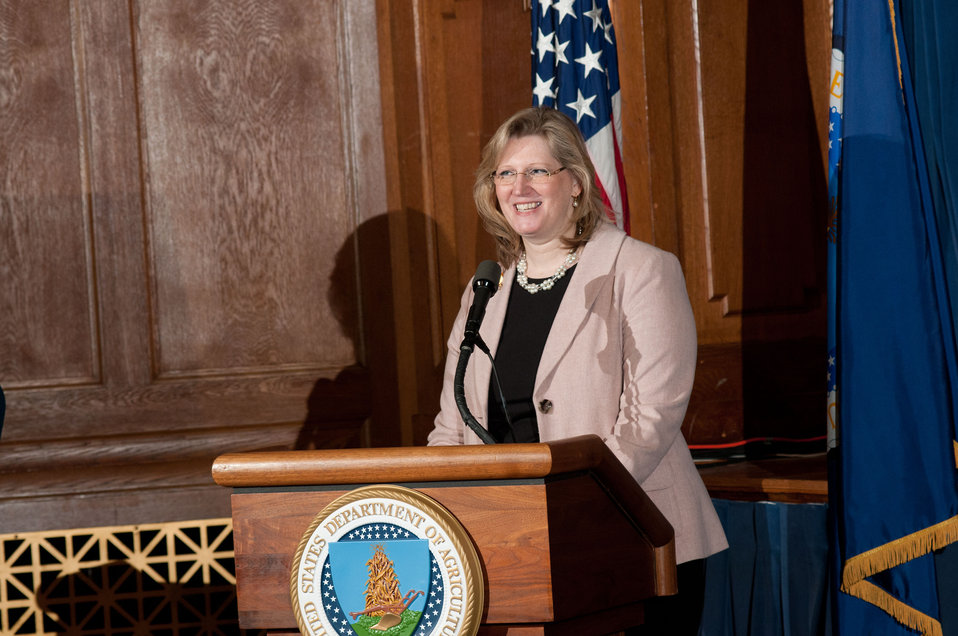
United States Department of Agriculture disability Employment Manager Alison Levy addresses the Work Force Recruitment Program’s (WRP) 'Your Key To Hiring Student Interns and Employees with Disabilities” event hosted by the United States Department of Agriculture (USDA) in the Jefferson Auditorium, Washington, D.C. on Tuesday, February 7, 2012.